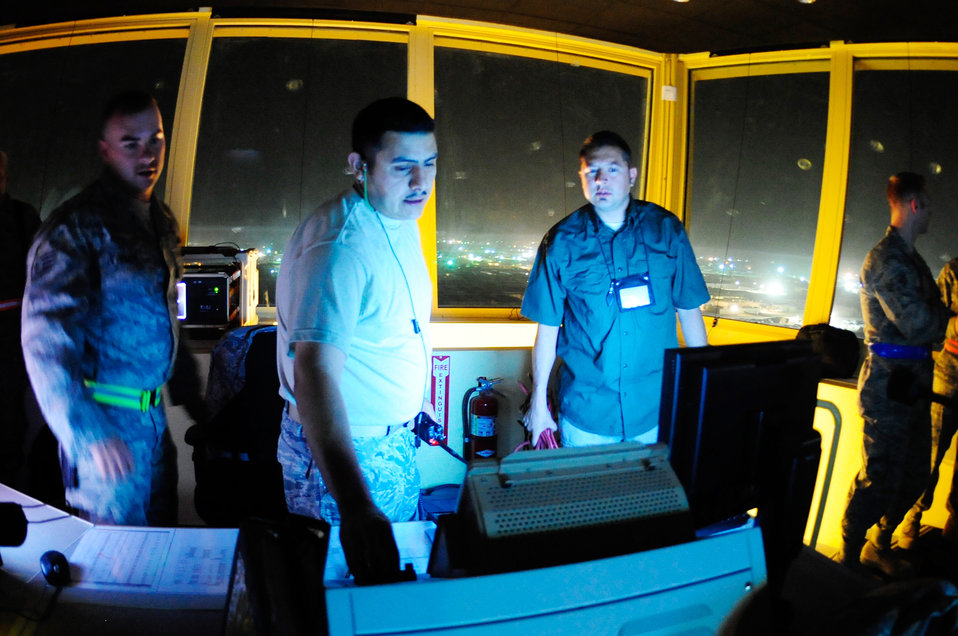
ATC tower opens

Staff Sgt. Quentin Bruhn (from left), Staff Sgt. Homar Vallejo and Rudy Diaz troubleshoot the electronic hardware in the new air traffic control tower cab March 12, 2010, at Ali Base, Iraq. Sergeant Bruhn is from the 407 Expeditionary Communications Squadron. Sergeant Vallejo is from the 407th Expeditionary Operations Support Squadron and Mr. Diaz is a contractor.